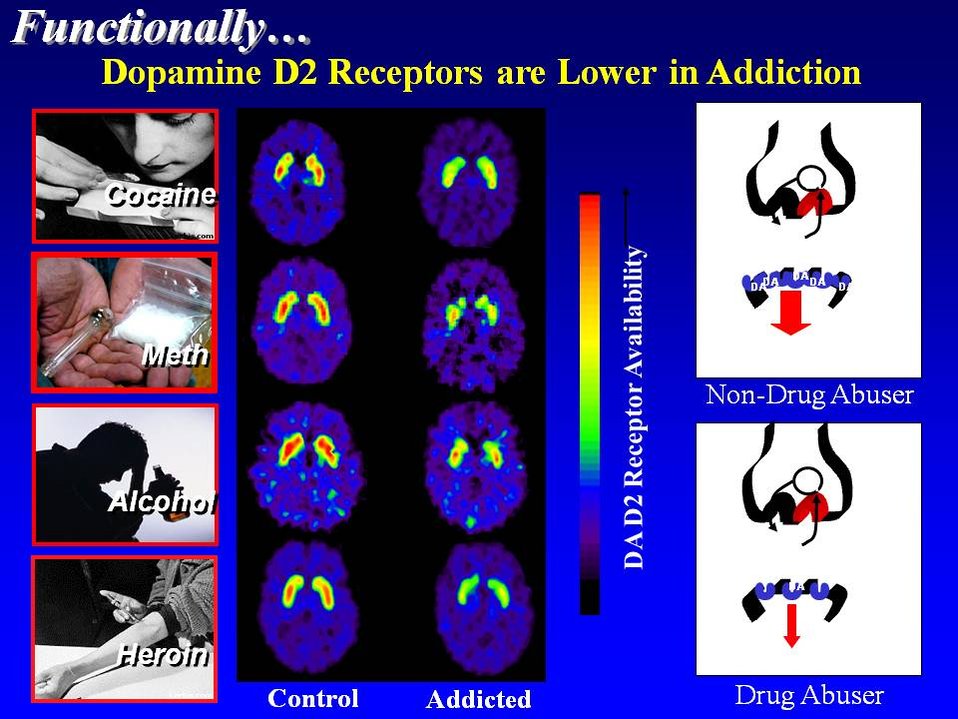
Drug Exposure

Repeated drug exposure also changes brain function. Brain imaging is used to show changes in human drug abusers.